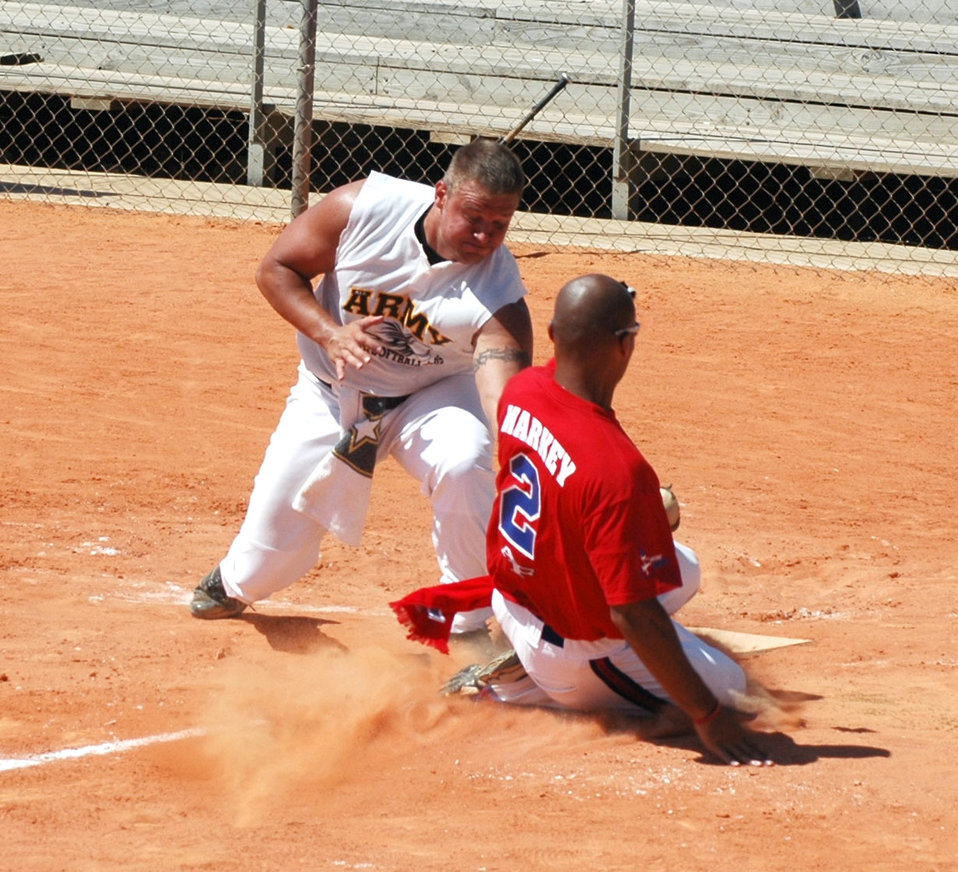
Air Force goes back-to-back, claims third title in four years

EGLIN AIR FORCE BASE, Fla. -- Christopher Markey slides into home as Army catcher Daniel Davis applies the tag. Markey was safe, and Air Force went on to defeat Army 12-5 during their second matchup of the 2005 Armed Forces Men's Softball Championships held here Sept. 7 to 9.